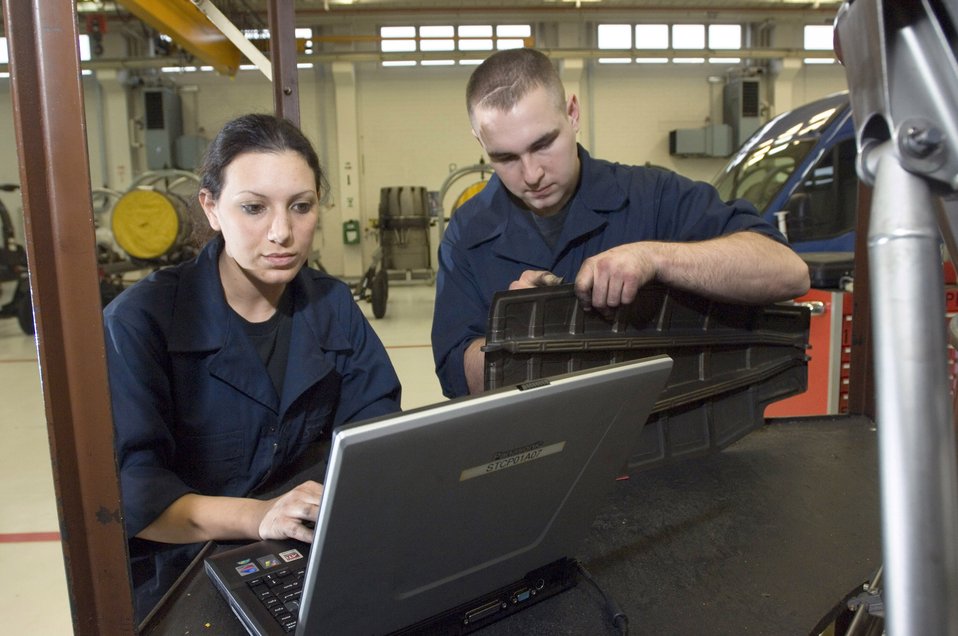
Spangdahlem mechanics fix jet engines 'on the line'

Senior Airmen Nicole Balderas and Ronald Craven repair F-16 Fighting Falcon jet engines at Spangdahlem Air Base, Germany, on Friday, March 24, 2006. Airman Balderas, of Carbondale, Penn., and Airman Craven, an air reservist from Long Beach, Calif., are jet engine mechanics with the 52nd Component Maintenance Squadron's propulsion flight.